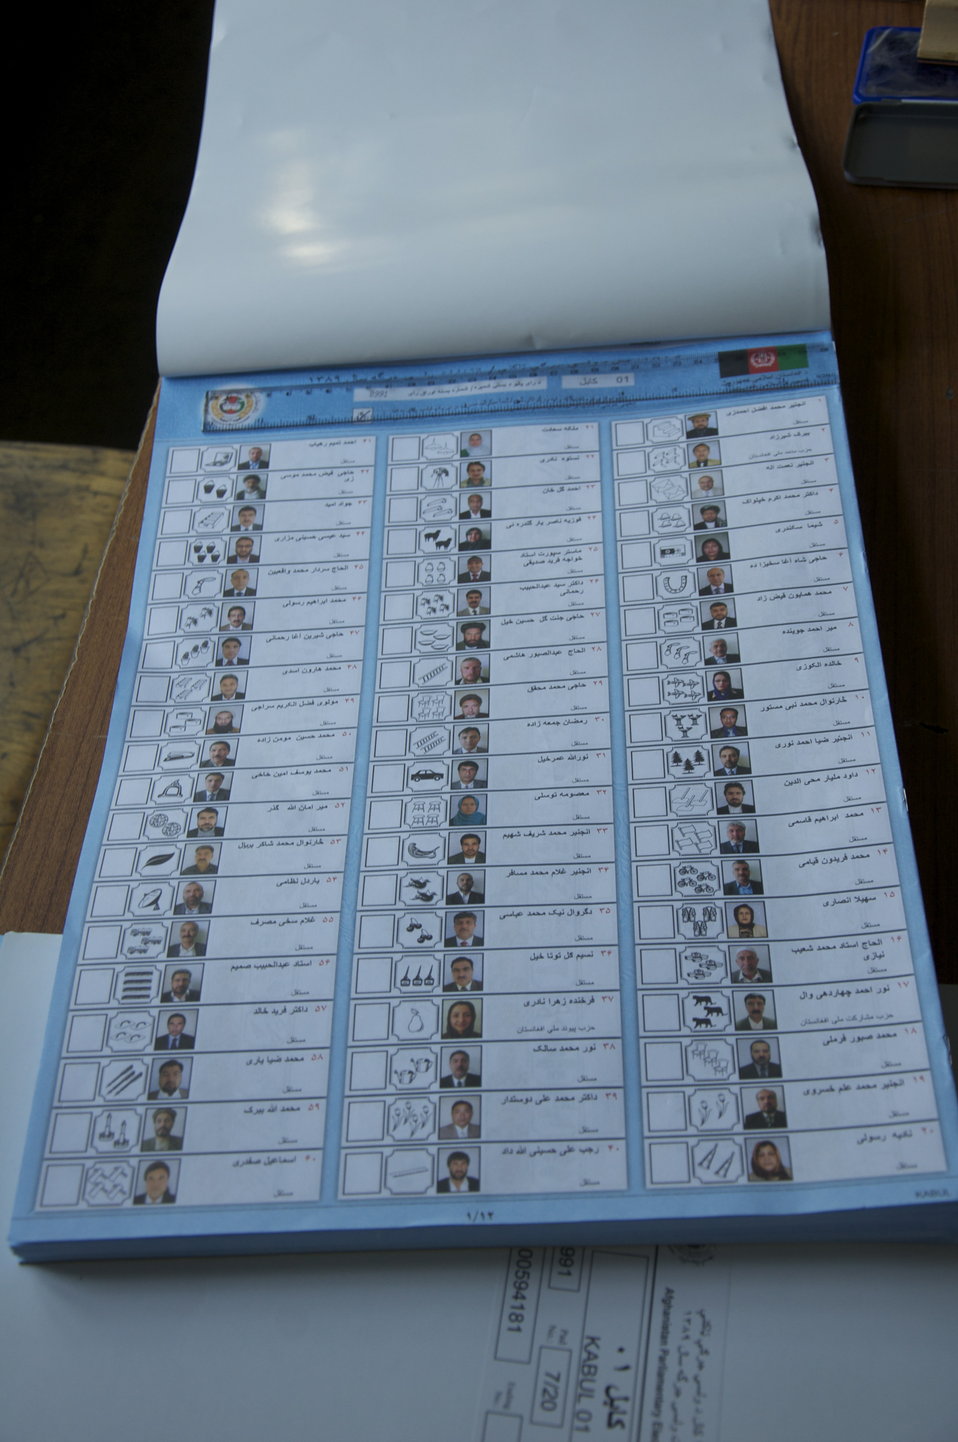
Ballot